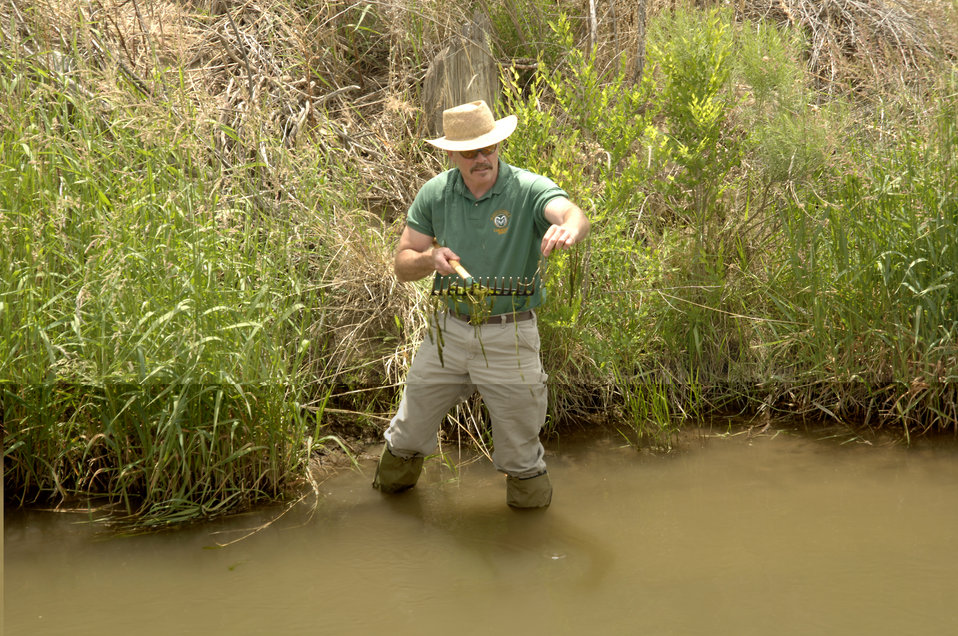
Colorado State University weed management specialist Scott Nissen rakes a lake in Colorado to inspect for the aquatic invasive species Eurasian Water Milfoil on June 12, 2008. A species is considered invasive it is nonnative to the ecosystem and its introduction causes or is likely to cause economic or environmental harm or harm to human health. The goal of the U.S. Department of Agriculture’s (USDA) Forest Service (FS) invasive species program is to reduce, minimize, or eliminate the potential for introduction, establishment, spread, and impact of invasive species across all landscapes and ownerships.